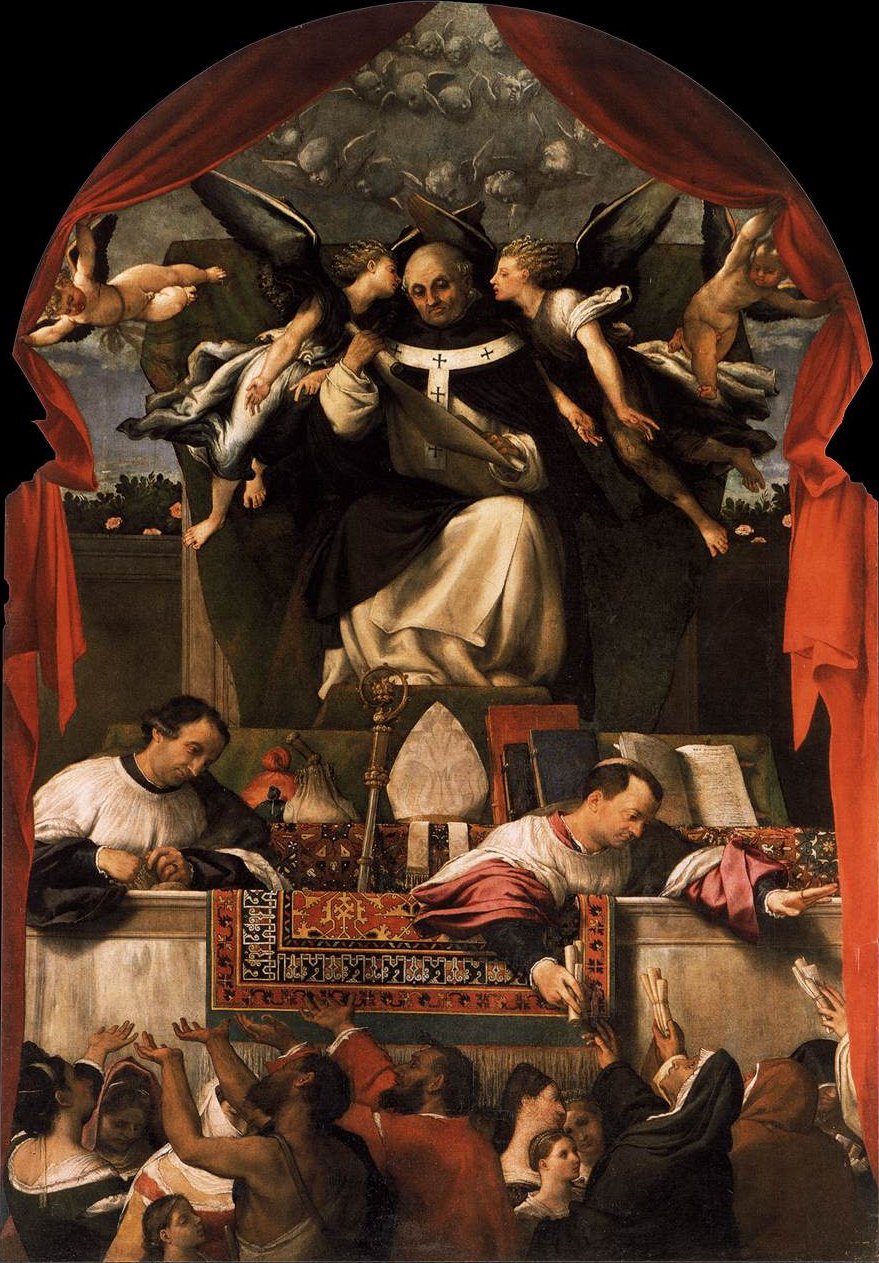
'The Alms of St. Anthony', oil on wood painting by Lorenzo Lotto, 1542. Basilica dei Santi Giovanni e Paolo, Venice